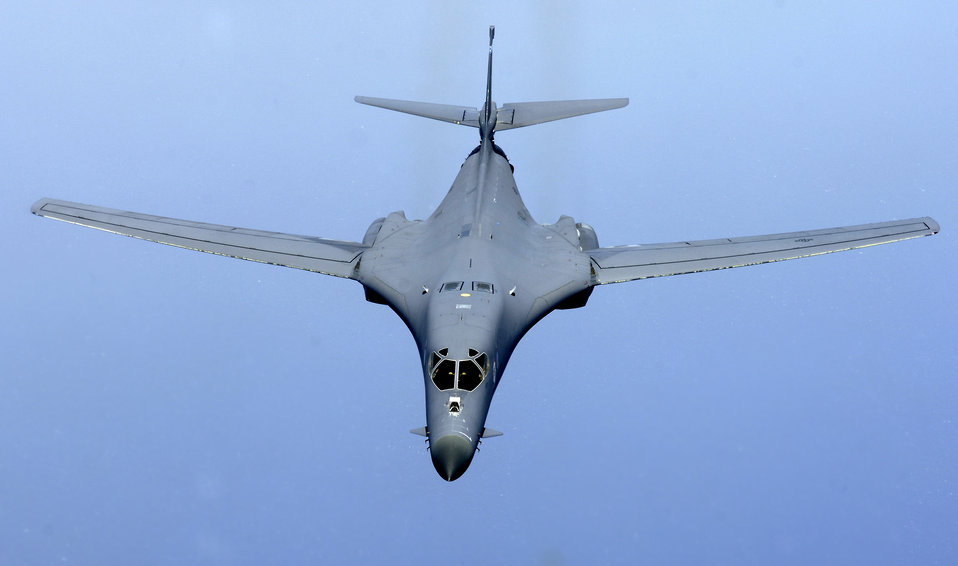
CENTAF airpower summary for Jan. 26

B-1B Lancers, like this one flying an Operation Enduring Freedom mission, provide close-air support for coalition troops in contact with enemy forces in Iraq and Afghanistan. The B-1B can carry the most firepower of any U.S. Air Force aircraft and can carry multiple varieties of multiple weapons on the same airplane. This gives the combatant commander tremendous lethality in support of the war on terrorism.